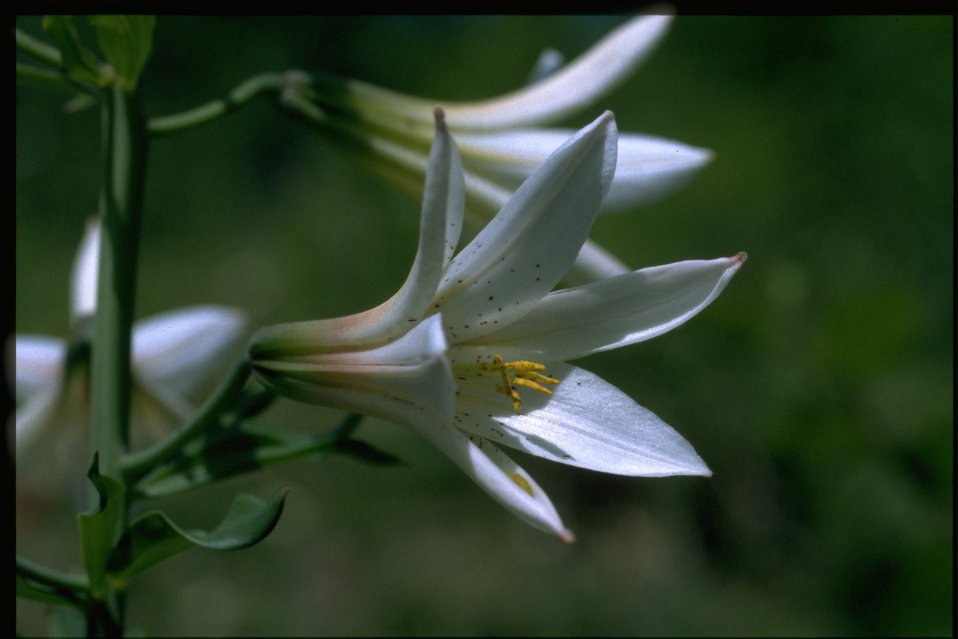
Closeup shot of Lilium washingtonianum.